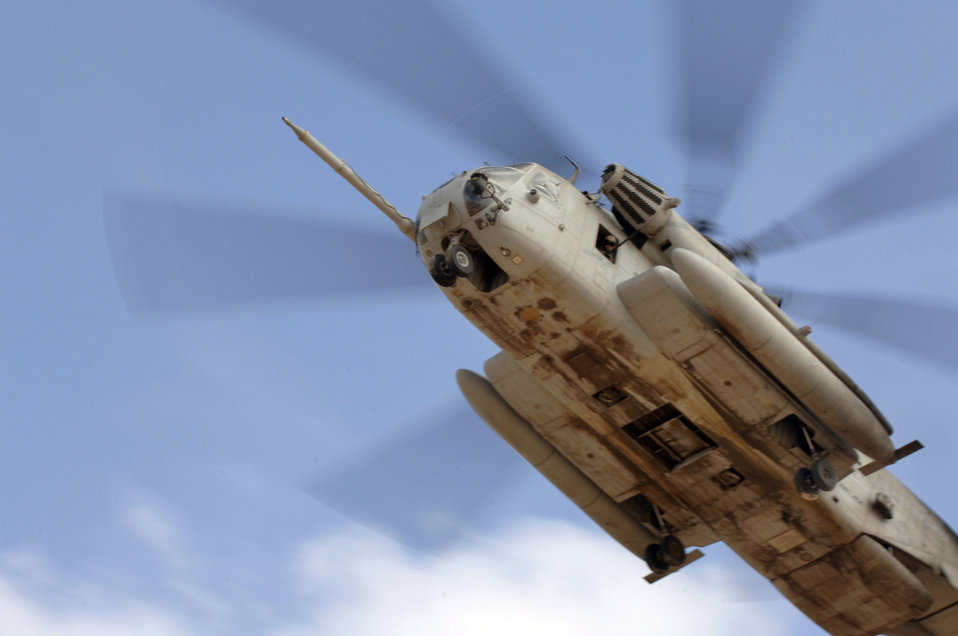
Search and rescue

CAMP LEMONIER, DJIBOUTI, Africa (AFPN) -- A Marine CH-53 Super Stallion helicopter carries Air Force pararescuemen to a landing zone to pick up simulated injured servicemembers during a search and rescue exercise here Feb. 8.